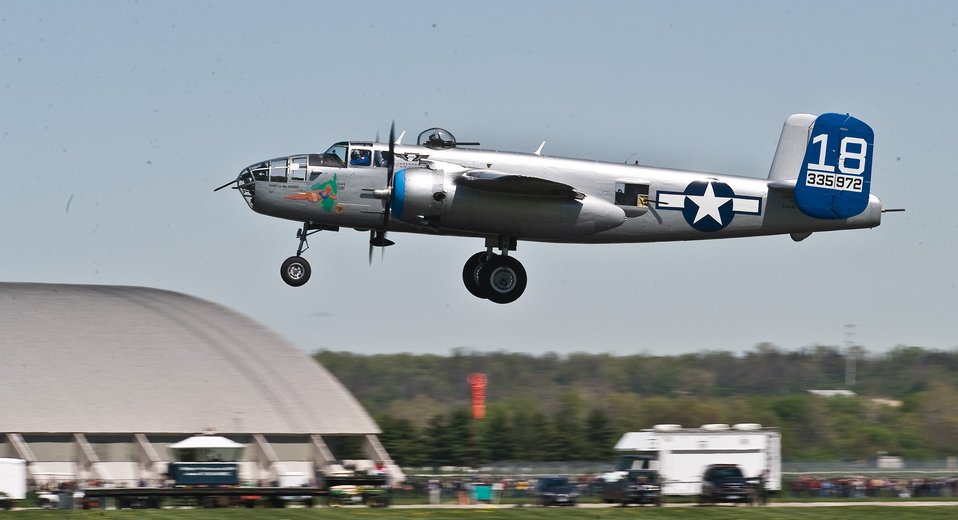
68th Reunion of Doolittle Raiders Flyover

B-25J